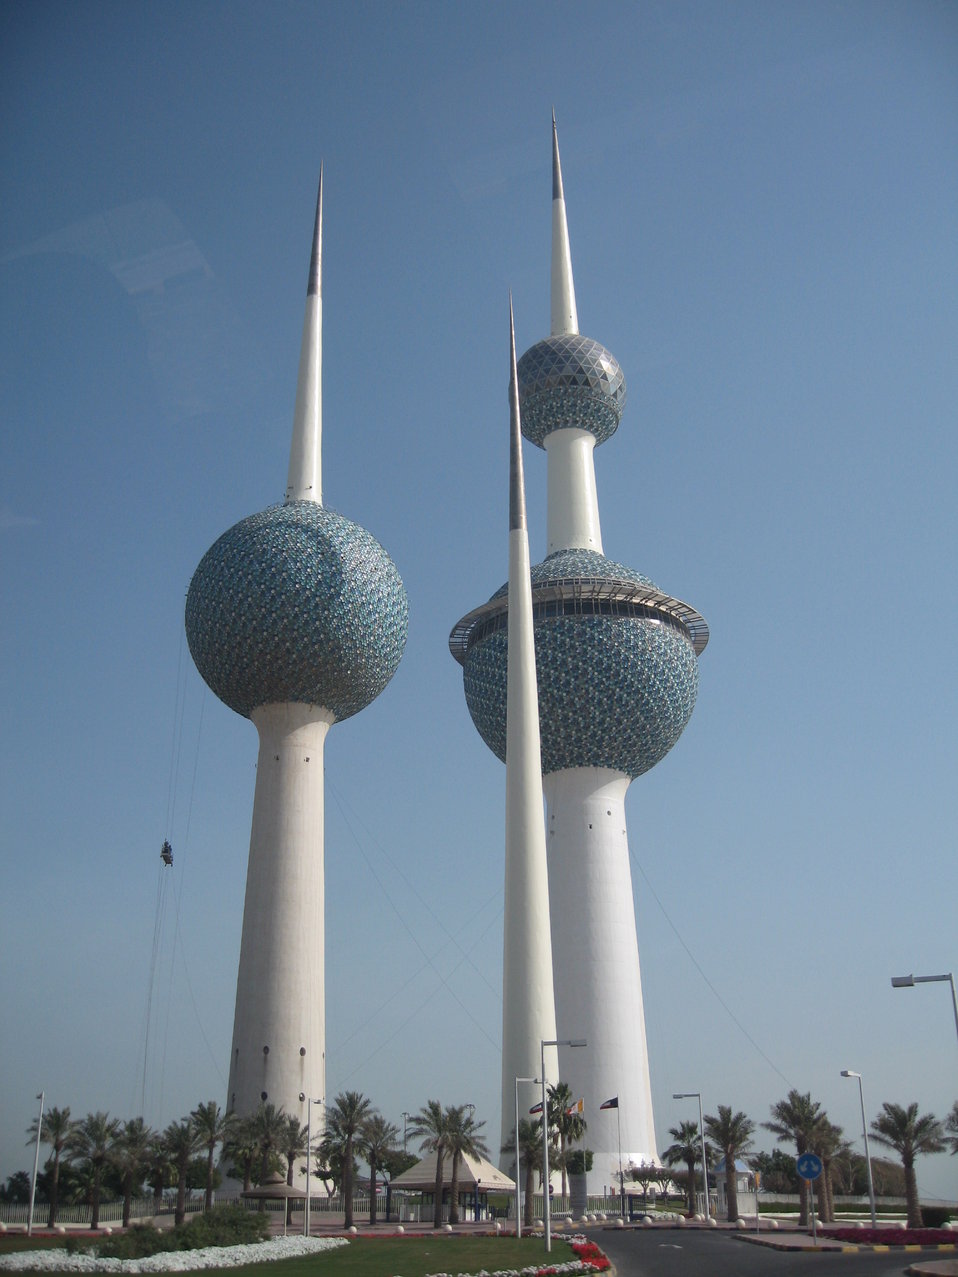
Kuwait Towers

On Wednesday, February 17, Deputy Secretary Wolin visited Kuwait to meet with senior government officials. Pictured here are the Kuwait Towers, a national landmark internationally recognized.